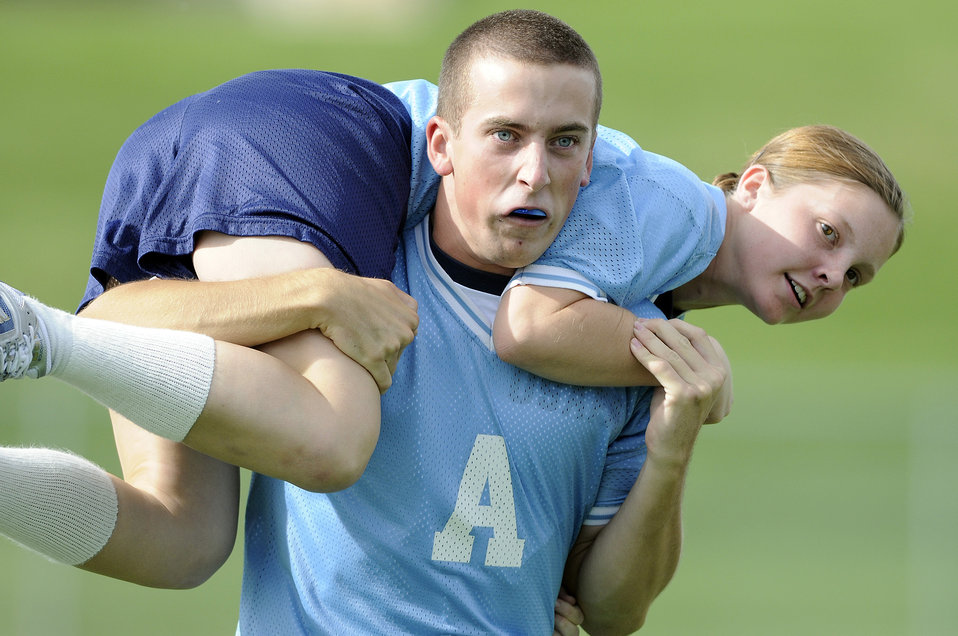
Class of 2013 Field Day

Basic cadet trainees with the U.S. Air Force Academy's Class of 2013 participate in the guerilla relays during Field Day activities here today. About 1,344 trainees competed in various athletic events during Field Day, including tug
of war, log relays, steeple chase and sprint relays. Basic cadet training started June 25 and continues through Aug. 1. The new cadets are in their first month of training and are learning about Air Force heritage, honor, discipline and Air Force core values, in addition to improving physical
fitness. The fall academic semester begins Aug. 6.